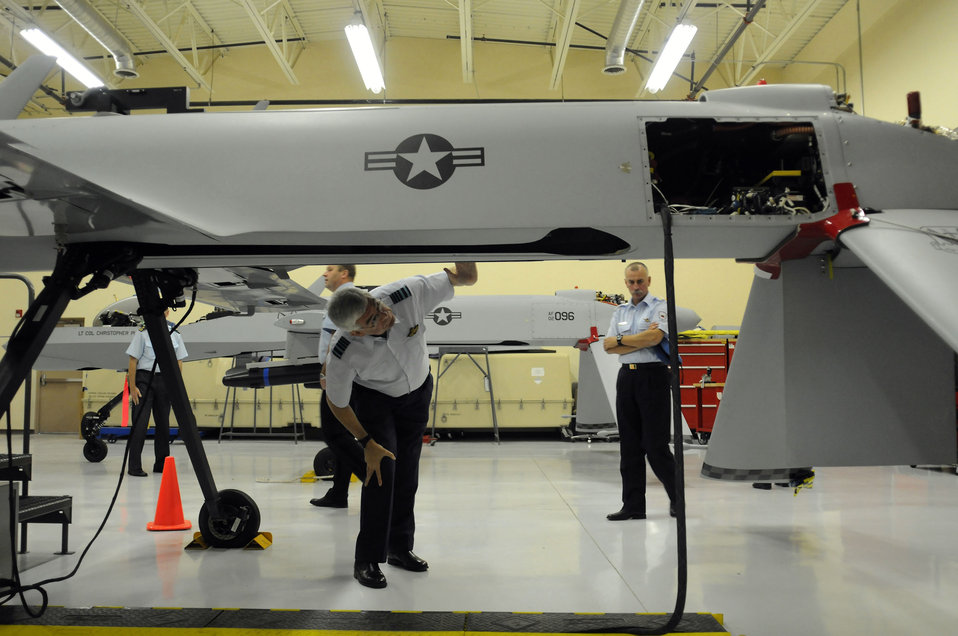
NATO air chiefs discuss common challenges, solutions

Belgium Lt. Gen. Gerard Van Caelenberge views the MQ-1 Predator unmanned aircraft system as Slovenian Lt. Col. Srecko Habjanic looks on Oct. 8 at Nellis Air Force Base, Nev. NATO air chiefs from 19 countries toured Air Force facilities at five locations during their visit. General Van Caelenberge is Belgium's air component commander, and Colonel Habjanic is the Slovenian air chief.